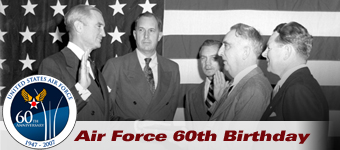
Air Force Secretary W. Stuart Symington takes oath

W. Stuart Symington, former Assistant Secretary of War for Air, takes the oath of office as Secretary of the Air Force from Chief Justice Fred Vincent. Left to right are: Secretary Symington, Secretary of the Army Kenneth C. Royall, Secretary of National Defense James N. Forrestal, Chief Justice Vincent and Secretary of the Navy John Sullivan.